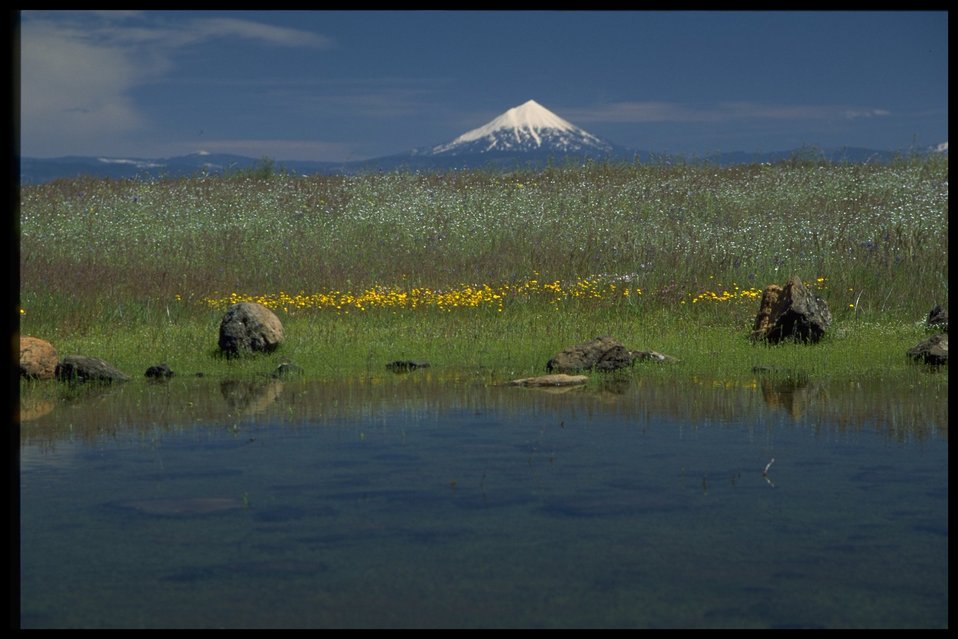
Scenic view of Mt. McLoughlin, vernal pools, Lasthenia californica, Plagiobothrys fulvus, Dichelostemma, and Amsincka intermedia.